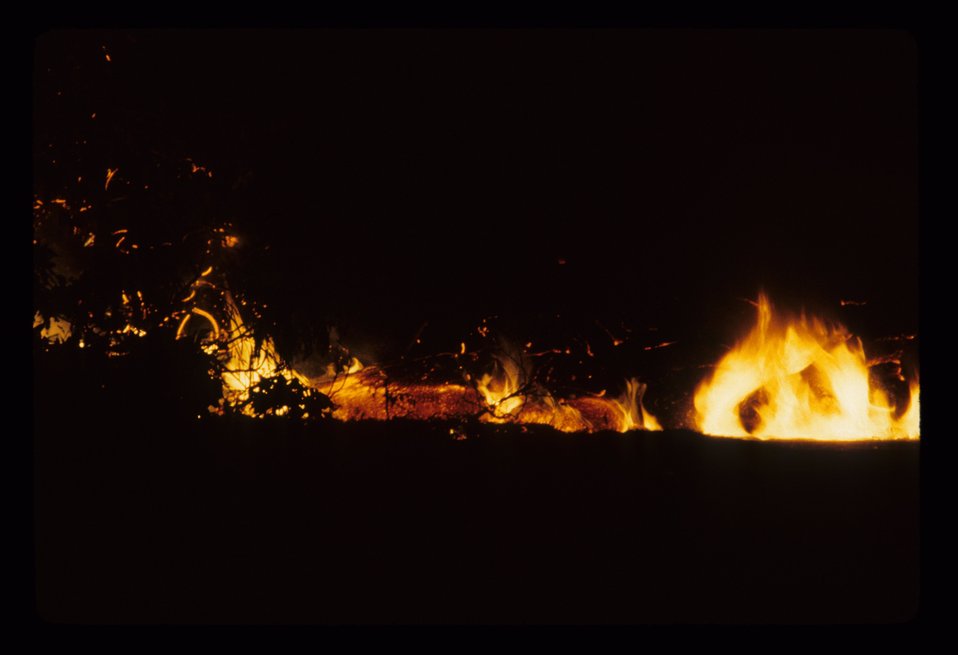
Lava passing through the brush setting surrounding bushes on fire.